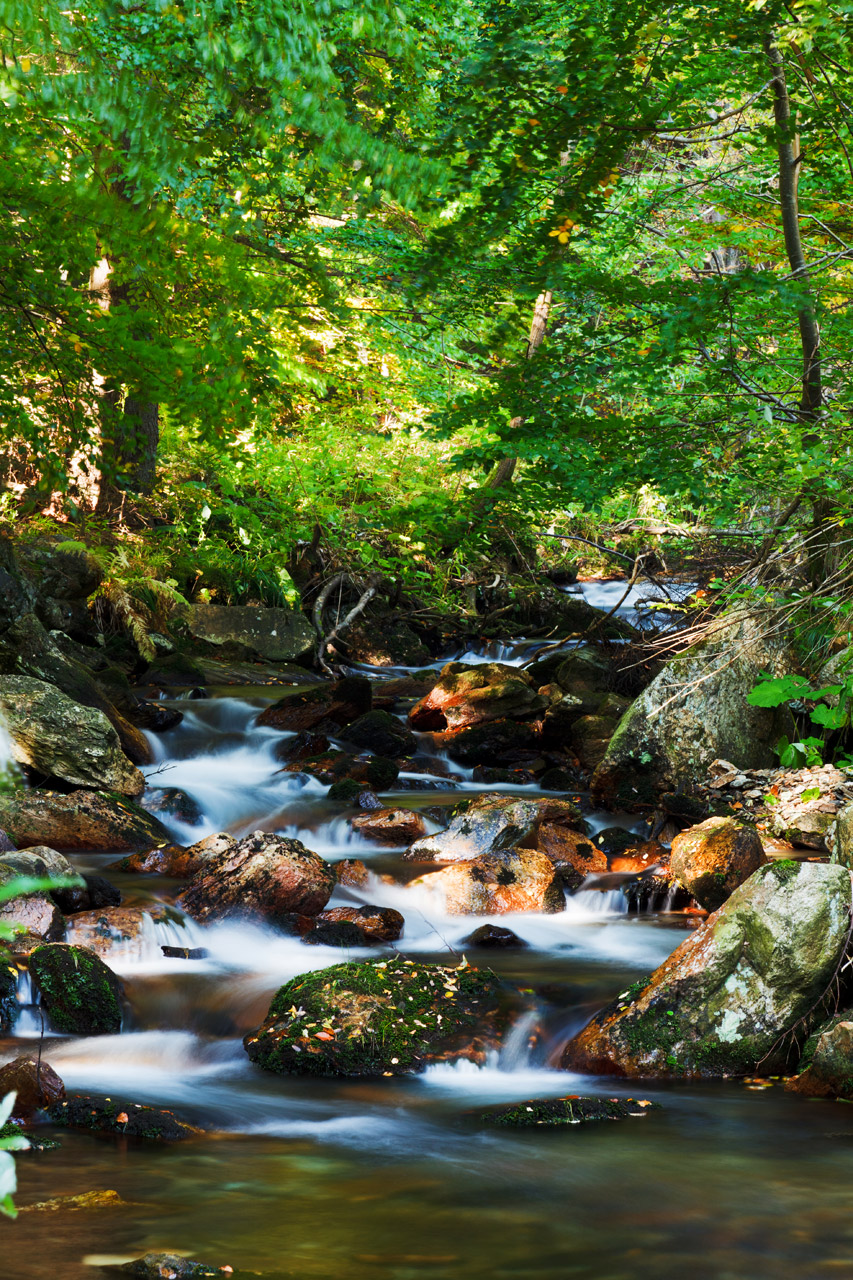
Small stream

Small mountain stream in autumn.